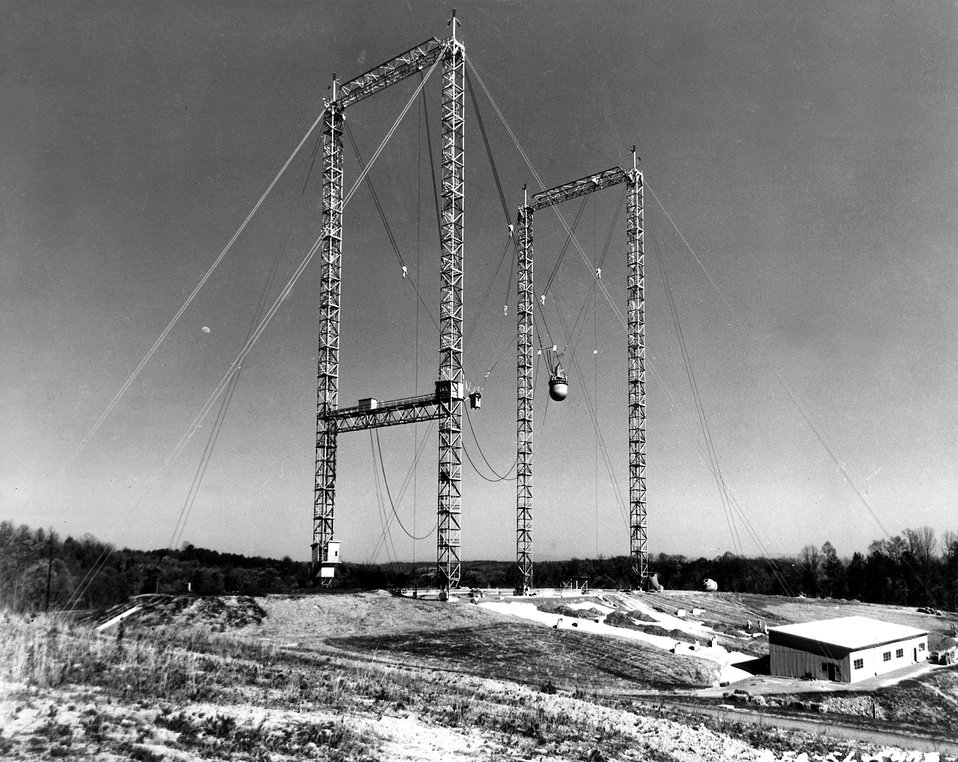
The Tower Shielding Facility at Oak Ridge is one of the most versatile instruments for reactor technology for research -- not only for its aerial dexterity but as a means for securing shielding data that may establish the nuclear reactor as an economical prime mover of the future. c. 1956